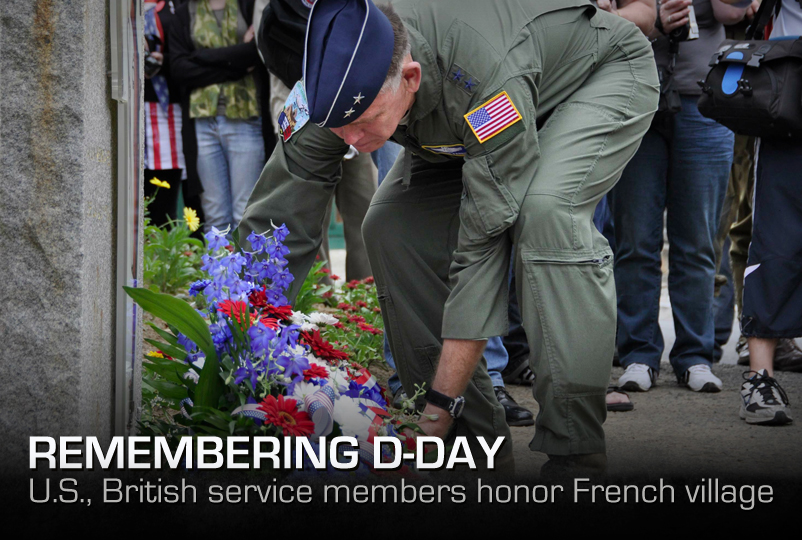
Remembering D-Day